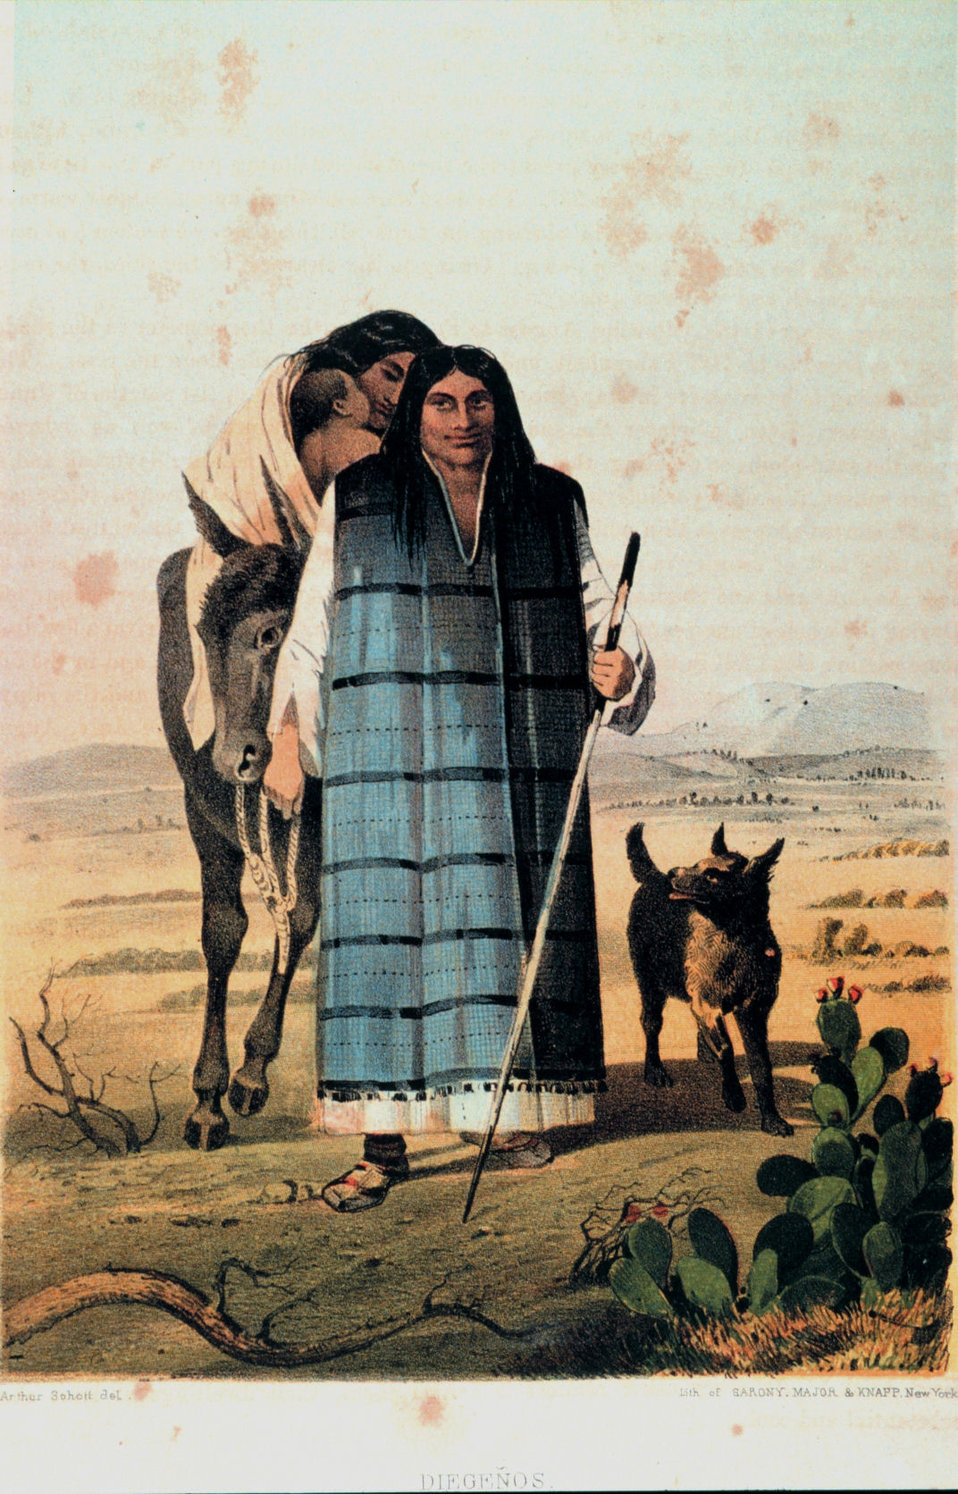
Diegenos. In: 'United States and Mexican Boundary Survey. Report of William H. Emory ....' Washington. 1857. Volume I. P. 107. Library Call Number F786 .U45 1857.